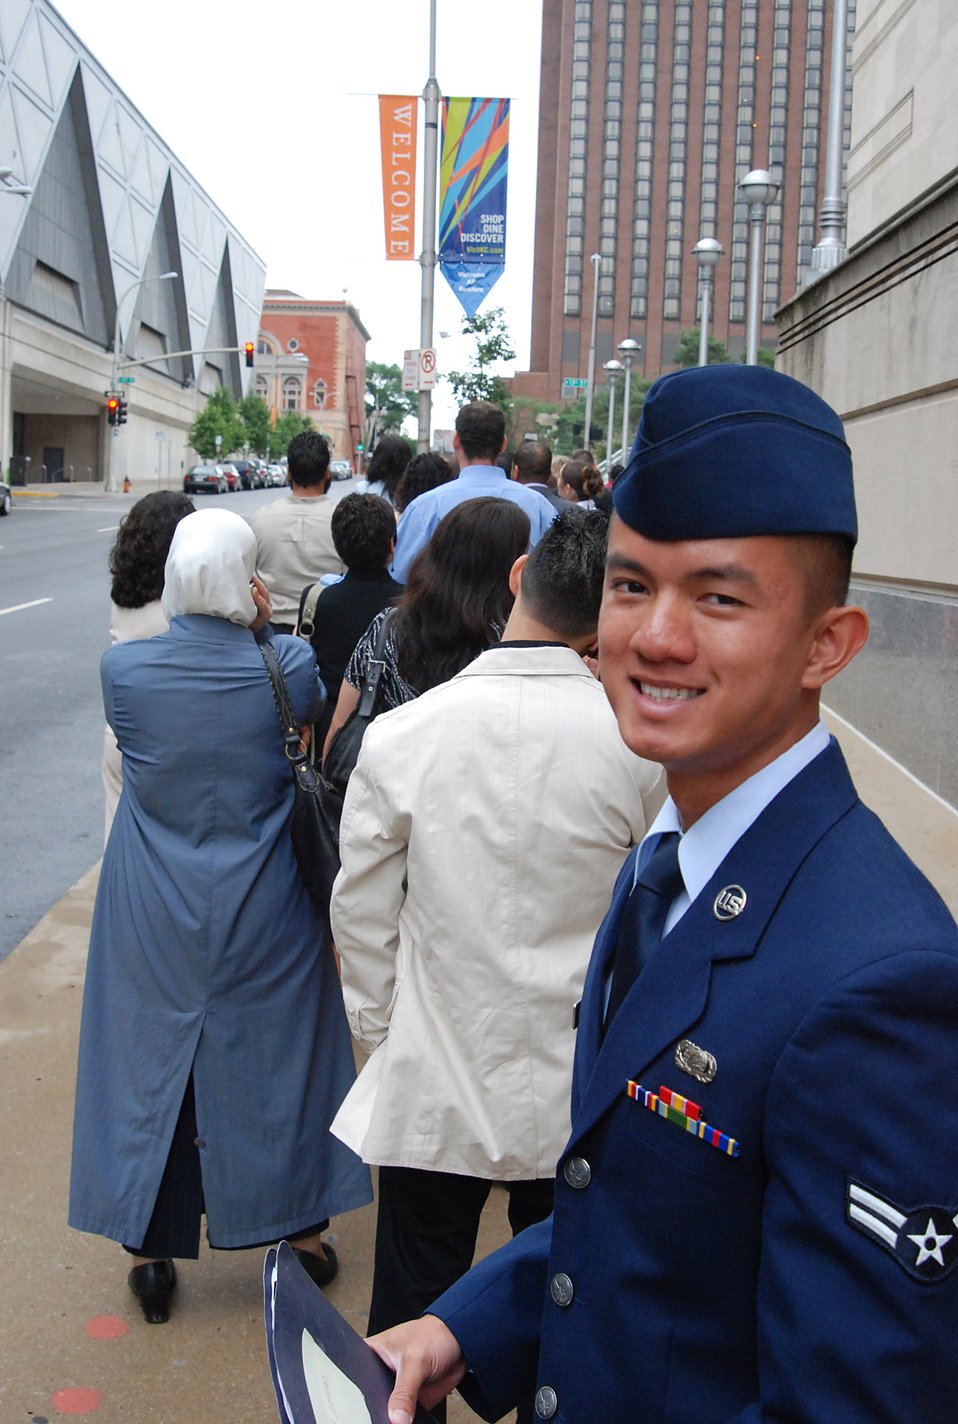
McConnell member makes journey; becomes true 'American Airman'

Airman 1st Class Thanh Tran waits at the end of a long line of immigrants who will become American citizens during a naturalization ceremony June 9 at the Municipal Auditorium, Kansas City, Mo. Airman Tran and almost 1,080 people representing 142 countries became citizens in western Missouri's largest naturalization ceremony. Tran is assigned to the 22nd Air Refueling Wing at McConnell Air Force Base, Kan.